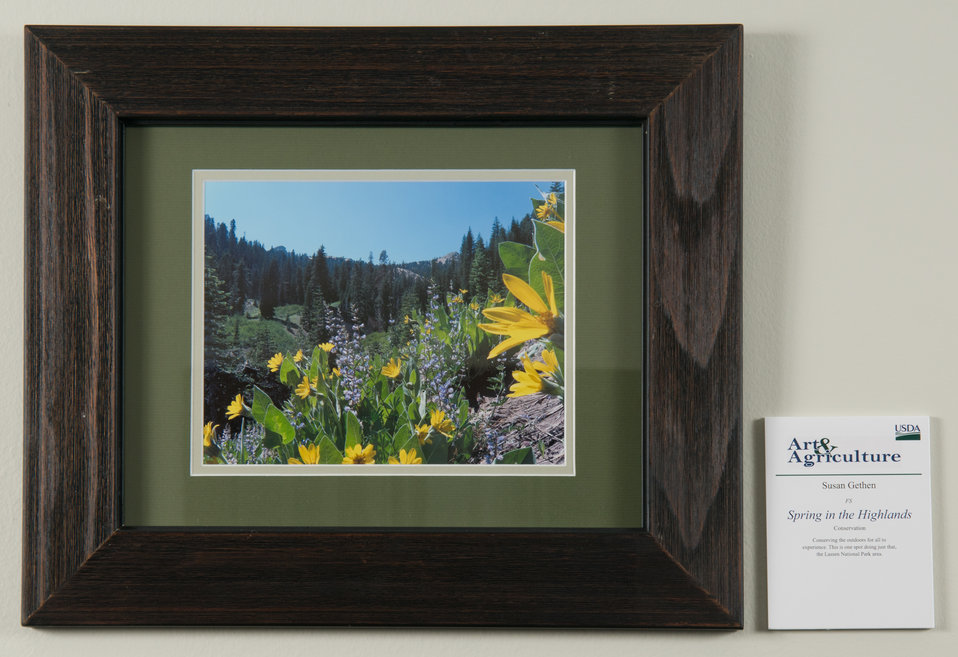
Online Viewer's Choice entries of the 2013 Art & Agriculture, Tuesday, July 9, 2013, in the South Building, Washington, D.C. Themes were expressed by employees from across the department and the contest was open to full-time and part-time USDA employees. Winning artwork will be displayed till the end of the year. U.S. Artistic expression is a creative outlet that is vital for an individual to grow and develop.